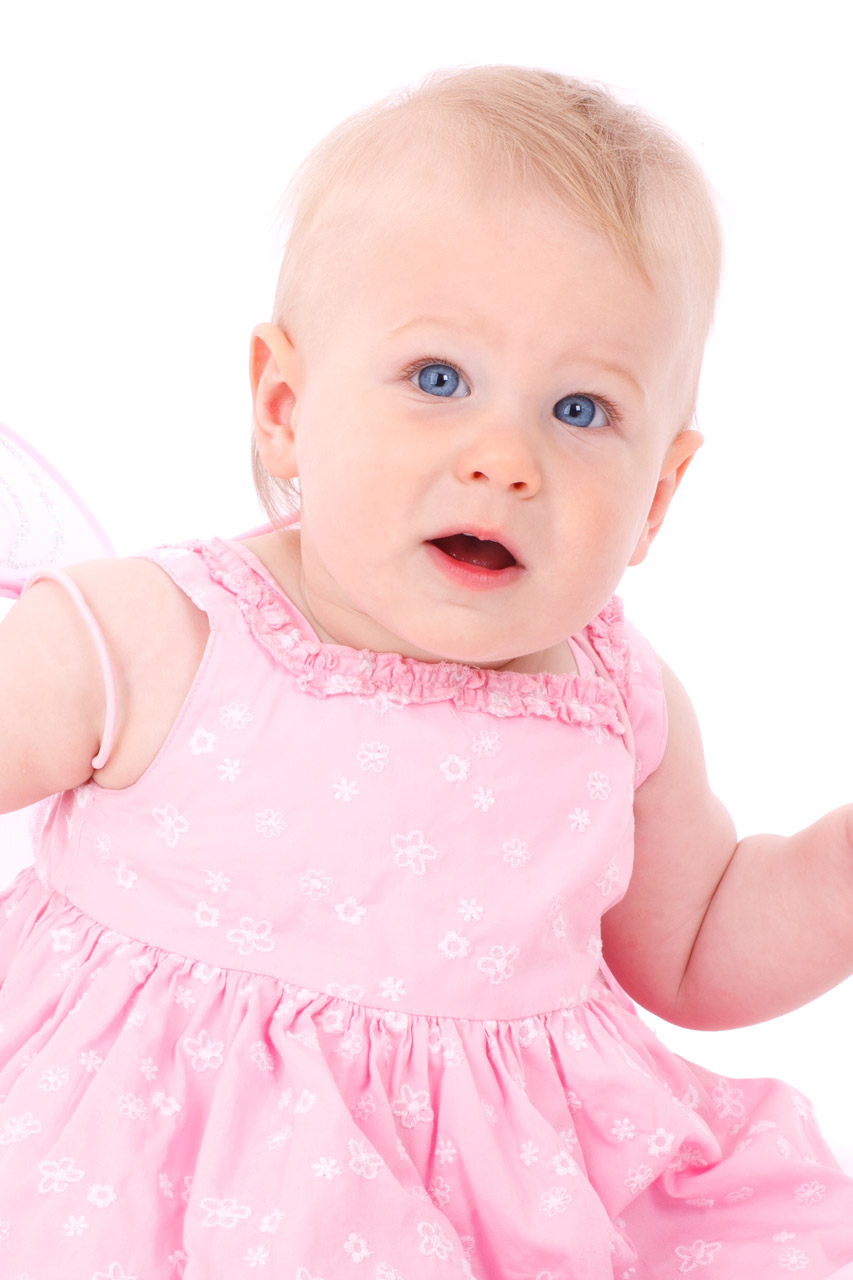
Curious baby

Curious little baby girl in pink with blue eyes isolated on white background.